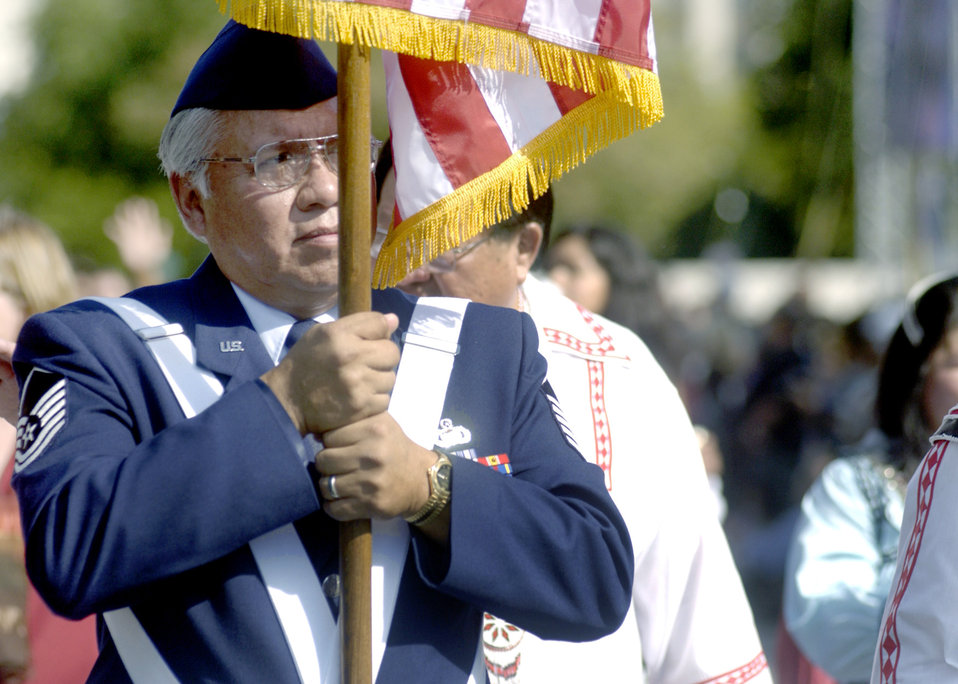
Showing his colors

WASHINGTON -- Master Sgt. Billy Chickaway carries the U.S. flag during a parade Sept. 21 celebrating the grand opening of the National Museum of the American Indian here. The parade was part of a six-day celebration honoring the first Americans and other Indians worldwide. Sergeant Chickaway is a native Choctaw and an information manager assigned to the Mississippi Air National Guard's 186th Air Refueling Wing.